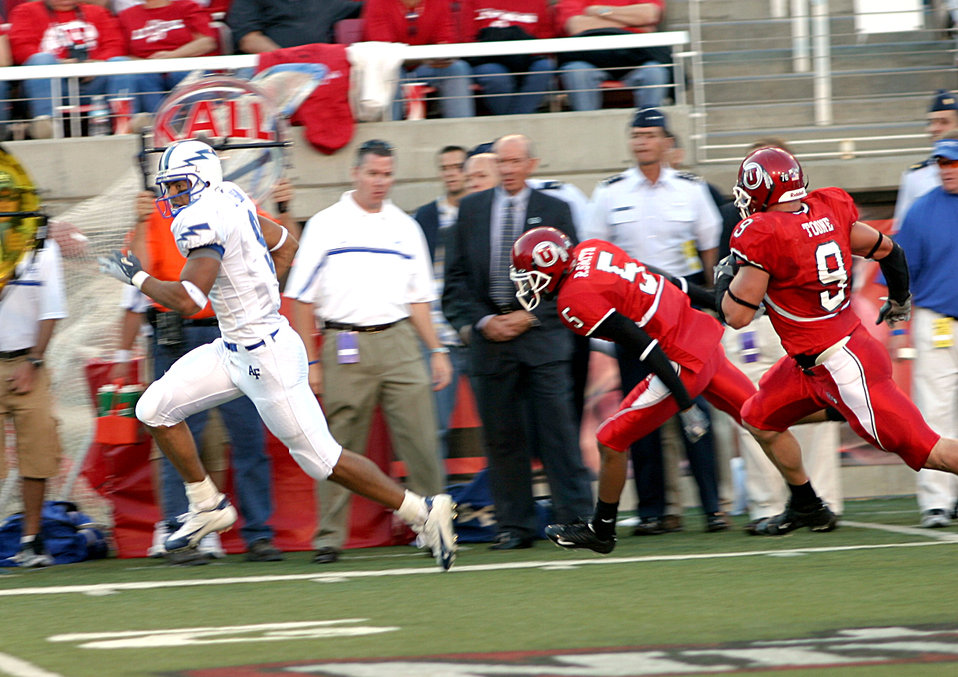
Falcon’s fourth-quarter comeback falls short in 38-35 loss

SALT LAKE CITY -- Falcon wide receiver Jason Brown streaks down the Air Force sideline with a pass as University of Utah cornerback Ryan Smith, 5, and rover Spencer Toone are in hot pursuit.